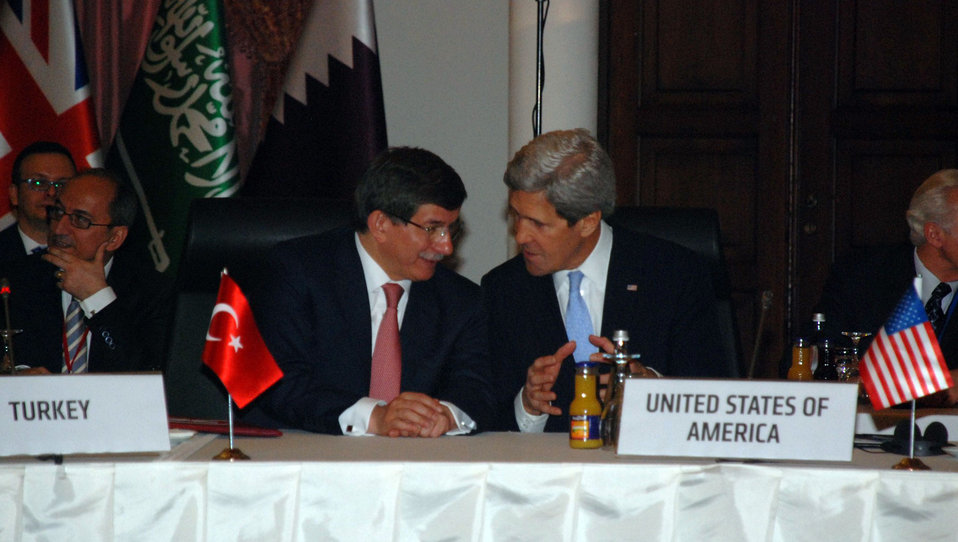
Secretary Kerry Speaks With Turkish Foreign Minister Davutoglu

U.S. Secretary of State John Kerry speaks with Turkish Foreign Minister Ahmet Davutoglu before the Friends of Syria Core Group Ministerial in Istanbul, Turkey on April 20, 2013.